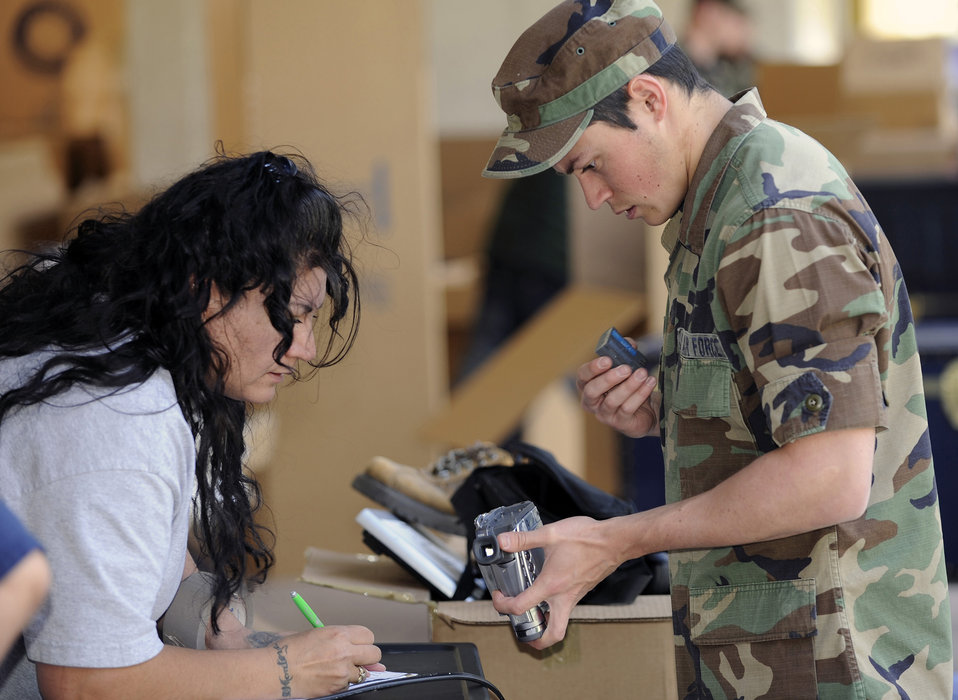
Move out!

Air Force Academy Senior Cadet Dean Chuva, a member of the graduating class of 2009, processes his baggage for shipment to his new assignment at Eglin Air Force Base, Fla. With only six days until graduation, many preparations must be done before being commissioned as a new lieutenant and entering active duty.